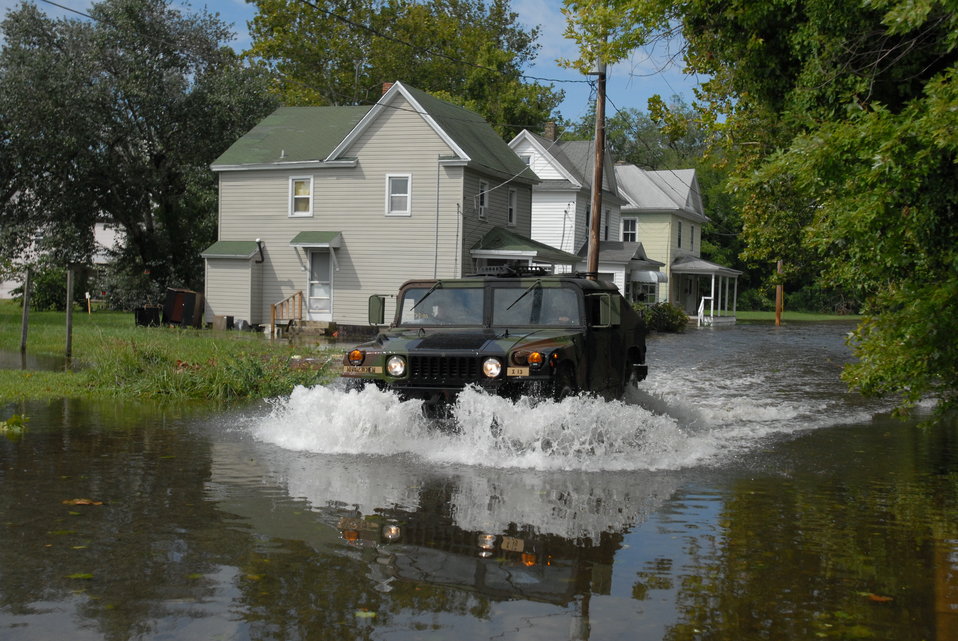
New efforts enhance Irene response

Maryland National Guard Soldiers from units across the state worked around the clock to provide critical support to civilian law enforcement and fire fighting agencies in Salisbury, Md., during Hurricane Irene on Aug. 28, 2011.